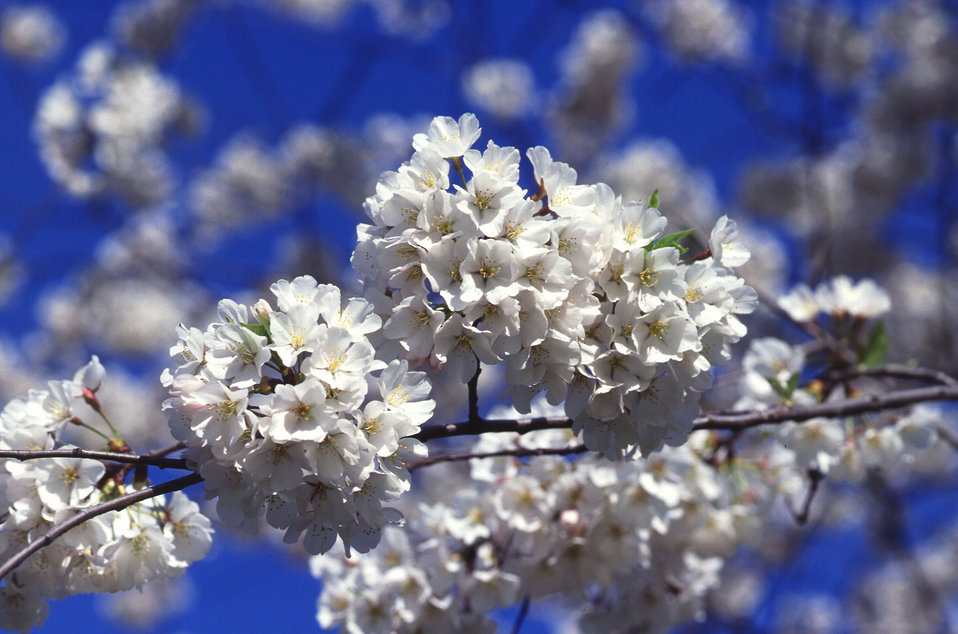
A close up of blossoms on cherry trees from Japan that ring the Tidal Basin in Washington, D.C.